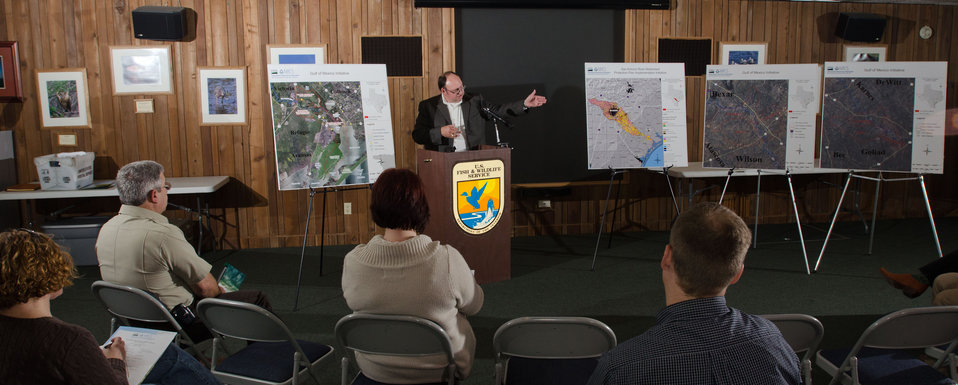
U.S. Department of Agriculture (USDA) Natural Resources Conservation Service (NRCS) State Conservationist Salvador Salinas with Federal and state partners, including representatives from U.S. Fish and Wildlife Service and local soil and water conservation districts (SWCDs) held a press conference at the Aransas National Wildlife Refuge, in Austwell, TX, on Friday, Dec. 16, 2011. Salinas covered the recent announcement of the USDA-NRCS Gulf of Mexico Initiative (GoMI) efforts to improve water quality, habitat, and the health of the Gulf ecosystem. “Launching this initiative is a top priority for NRCS in Texas because the Gulf of Mexico is one of our state’s premier natural resources. It provides vital habitat for wildlife, and creates jobs in industries that depend upon them. The health of this resource is essential to Texas as well as to the nation,” said Salinas.
The Texas initiative focuses on three watersheds in Refugio, Calhoun, Victoria and Aransas counties and ultimately the Gulf of Mexico. “What is really compelling about GoMI and other similar conservation efforts is that they prove that Texas farmers and ranchers not only feed and clothe us and power our vehicles, but they can also help protect and restore our rivers and provide more habitat for wildlife,” stated Salinas. “That’s why it is important that this conservation project is not about taking productive farm land out of production. This is a working lands initiative, so that not only are we helping to restore the health of the Gulf, but we’re also helping to sustain and enhance the productivity of the Gulf’s farms and ranches.”